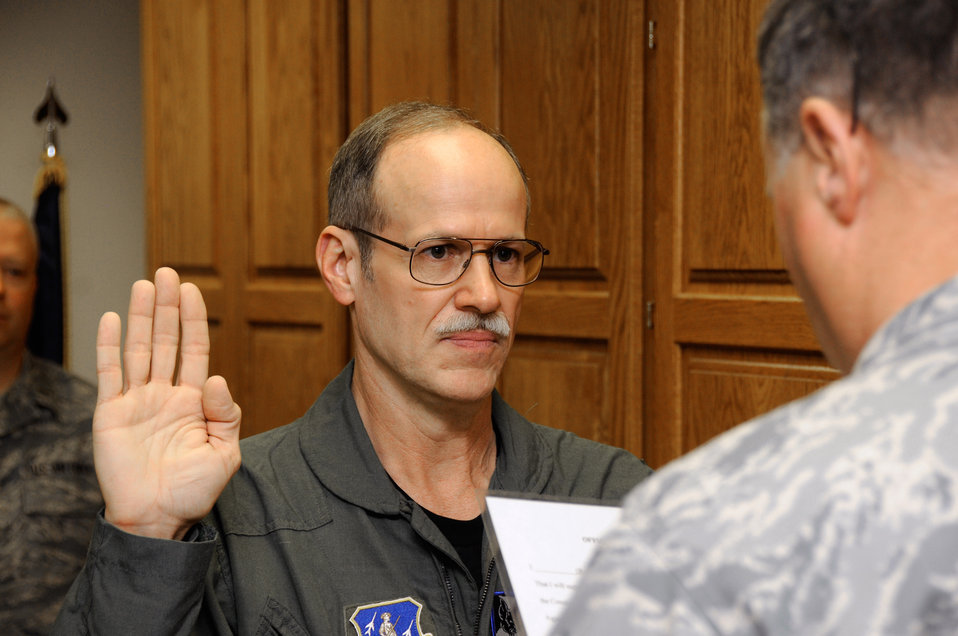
Children inspire father to serve

Maj. (Dr.) Glenn Harden, a physician from Sioux City, Iowa, is sworn into the Air National Guard May 1, 2010, at the 185th Air Refueling Wing in Sioux City. Doctor Harden will work as the flight surgeon at the wing's medical clinic.